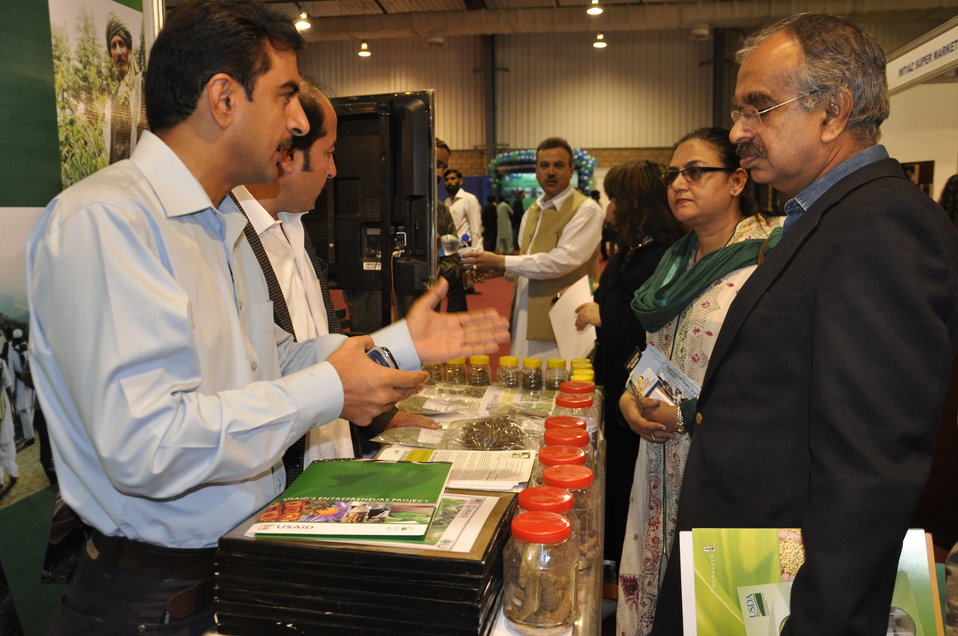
Visitors taking interest in the Medicinal and Aromatic Plants stall exhibuted by Entrepreneurs Project at the Expo